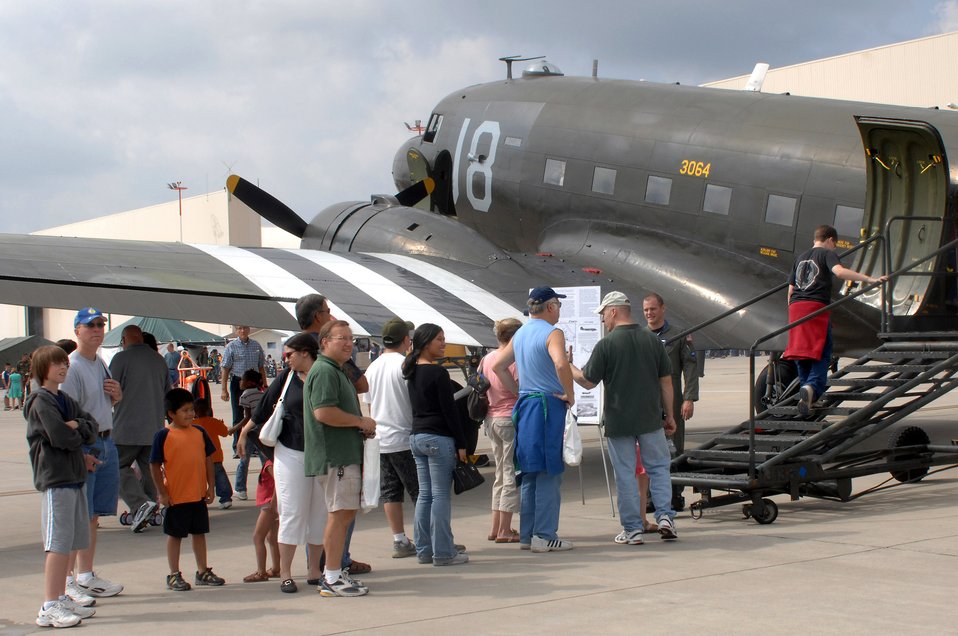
Command celebrates Air Force's 60th Anniversary

A crowd waits to board the C-47 Dakota at the U.S. Air Forces in Europe's Air Force 60th Anniversary celebration Aug. 11 at Ramstein Air Base, Germany.